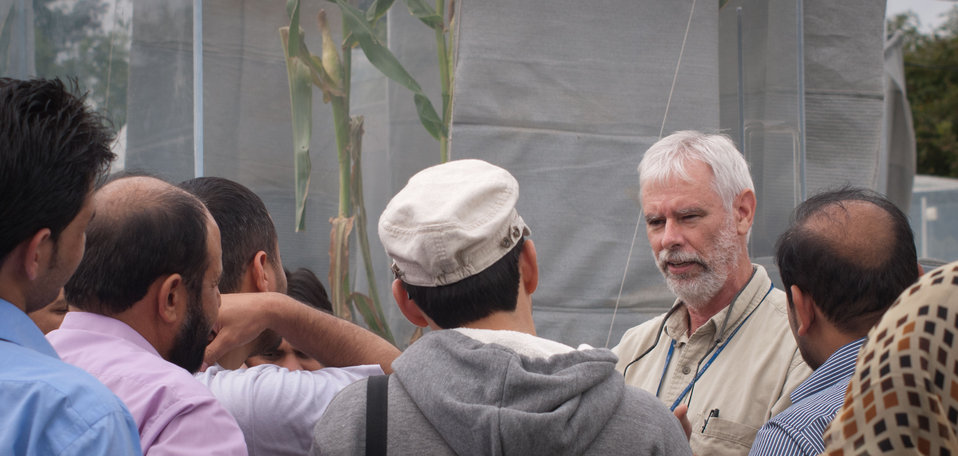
Dennis Timlin (khaki shirt) of USDA’s Agricultural Research Service (ARS) spoke with the 12 Borlaug Fellows from Afghanistan’s Ministry of Agriculture, Irrigation and Livestock (MAIL) about the Global Climate Change Lab at the ARS facility’s Soil Plant Atmosphere Research (SPAR) units in Beltsville, Md. on Wednesday, September 21, 2011. SPAR units provide precise control of the major environmental variables influencing crop growth including temperature, humidity, and atmospheric carbon dioxide concentration. The SPAR units are fully automated to measure crop canopy gas exchange including photosynthesis, respiration, transpiration and water use efficiency.